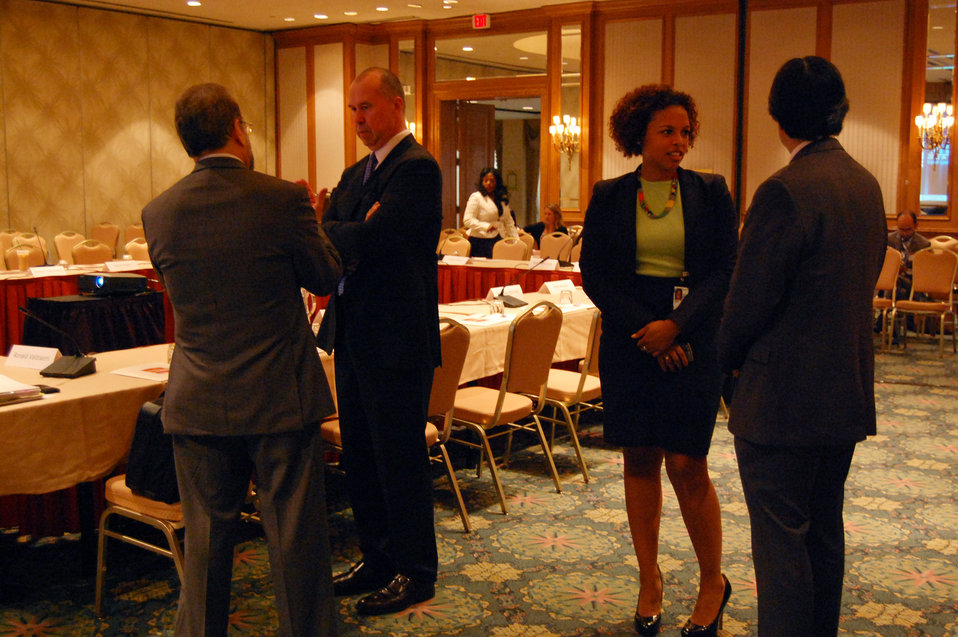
PACHA conf023